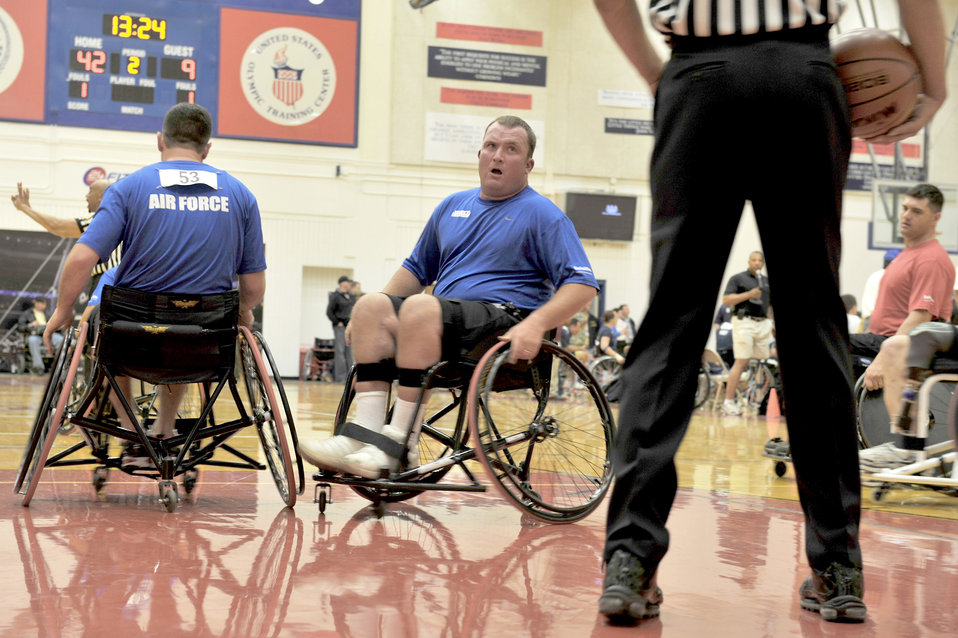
Warrior Games basketball competition

Staff Sgt. Richard Pollock II looks to the referee as he prepares to shoot a free throw during a wheelchair basketball game against the Marines May 11, 2010, at the Olympic Training Center in Colorado Springs, Colo. The Air Force lost 68-13.